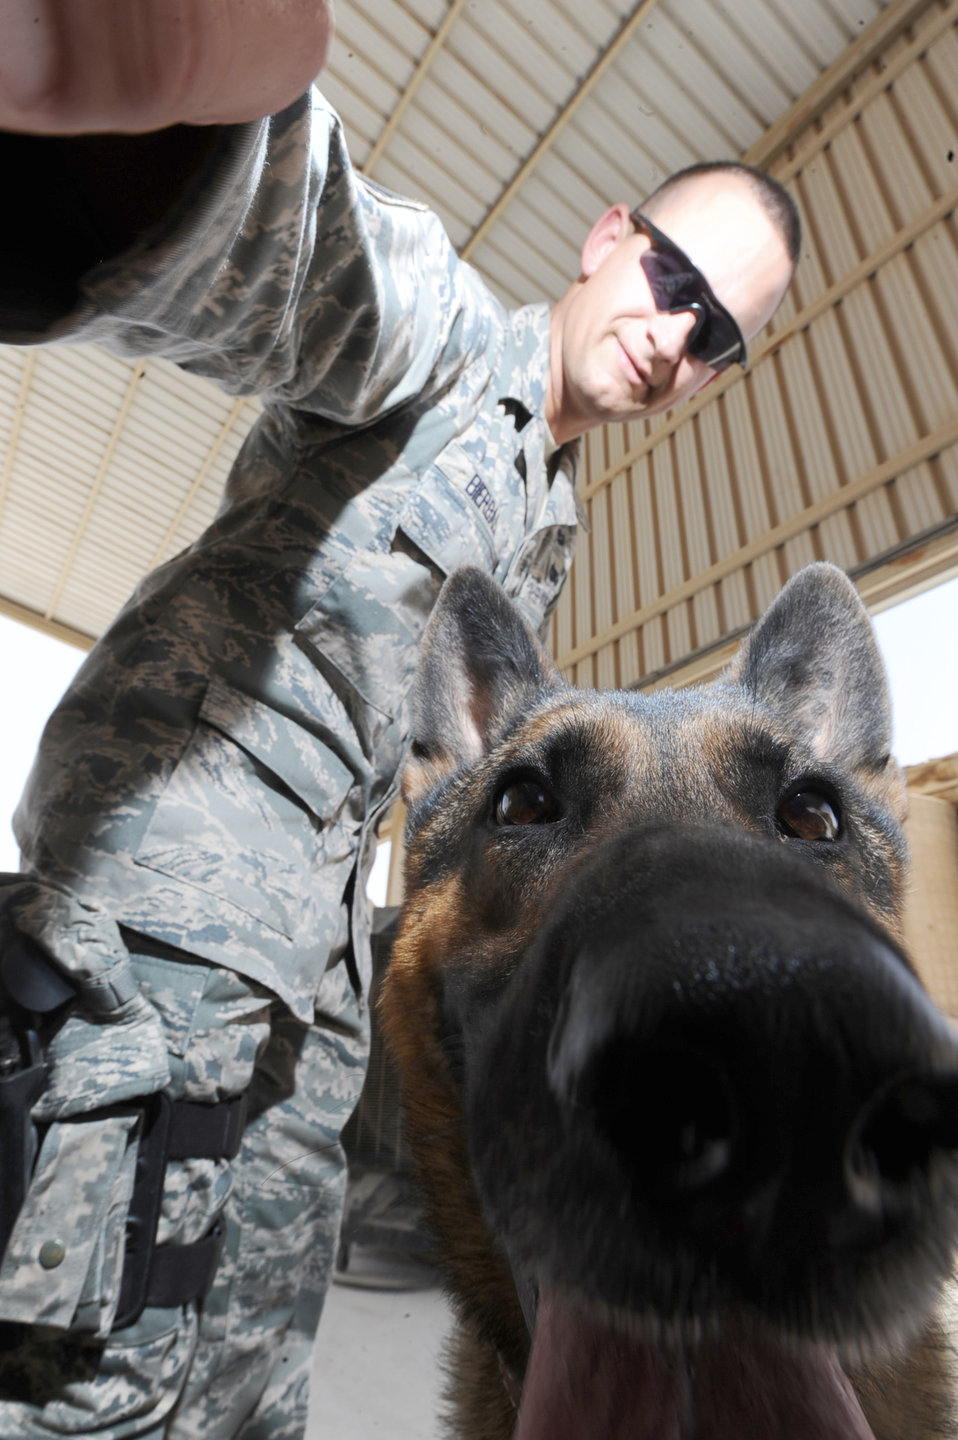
Front-line defenders

Staff Sgt. Jonathan Bierbach and Deni perform a random anti-terrorism measure inspection April 9, 2010, at an air base in Southwest Asia. Sergeant Bierbach is a 379th Expeditionary Security Forces Squadron military working dog handler. Deni is a 379th ESFS military working dog.